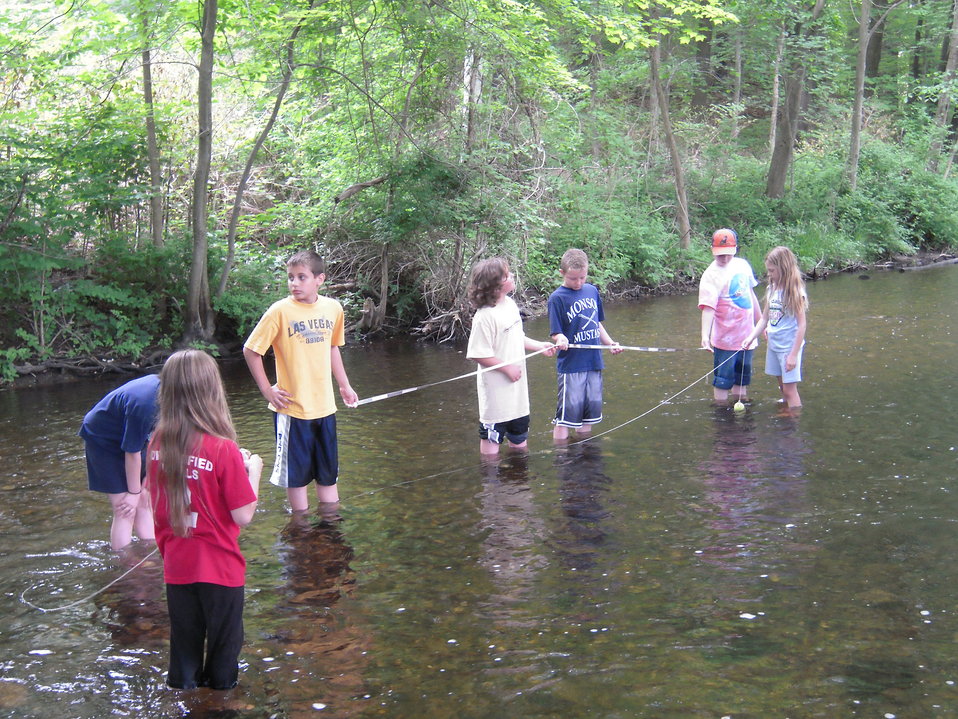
Recording the river's flow